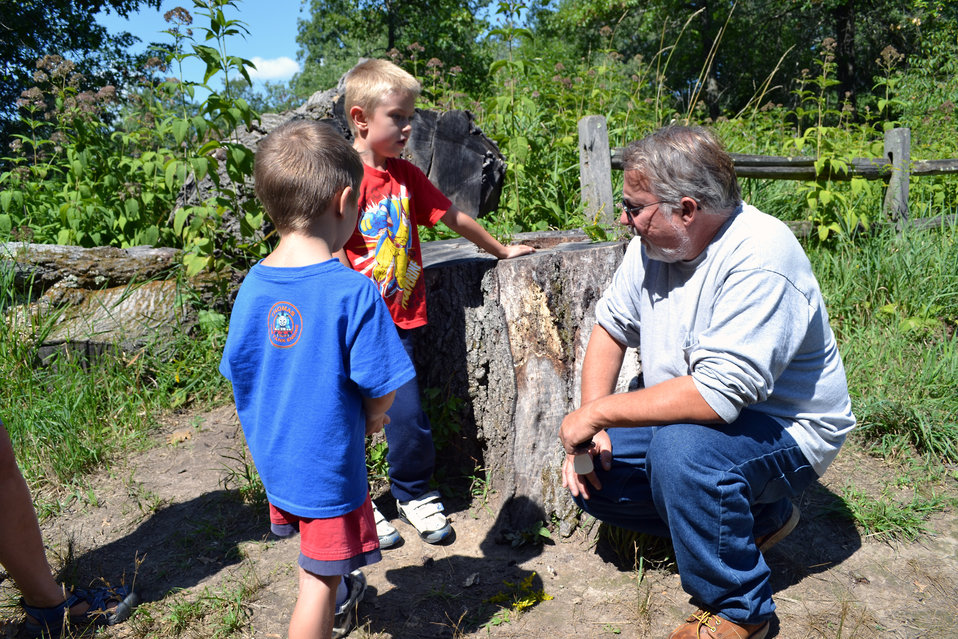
Exploring The Sentinel

McHenry County Conservation District Natural Resource Manager Ed Collins shares the story of The Sentinel, a black oak that lived for more than 300 years.